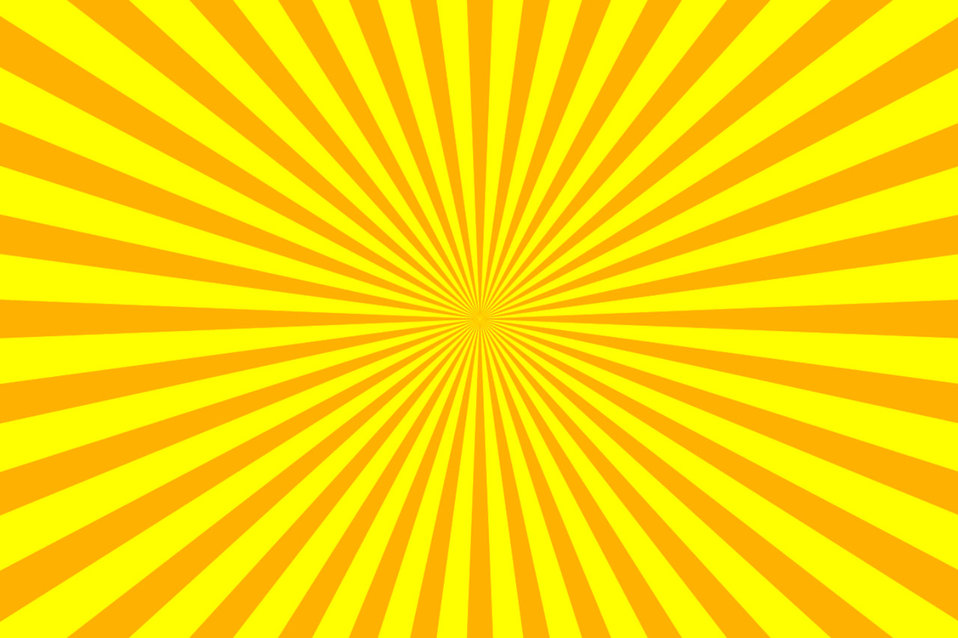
Yellow rays background.